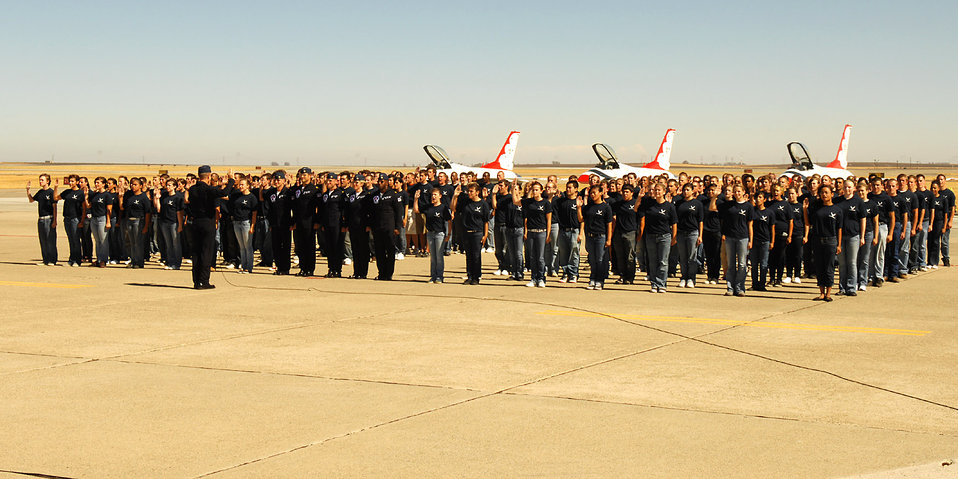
Recruiting swearing-in ceremony

Lt. Col. Greg Thomas, commander of the Air Force Thunderbirds, administers the oath of enlistment Aug. 30 to 154 future Airmen at Travis Air Force Base, Calif. The group, members of the 364th Recruiting Squadron Delayed Entry Program, were sworn in at the Travis Air Expo 2008 before a crowd of more than 80,000 airshow spectators. The event is the largest DEP swear-in ceremony to date.